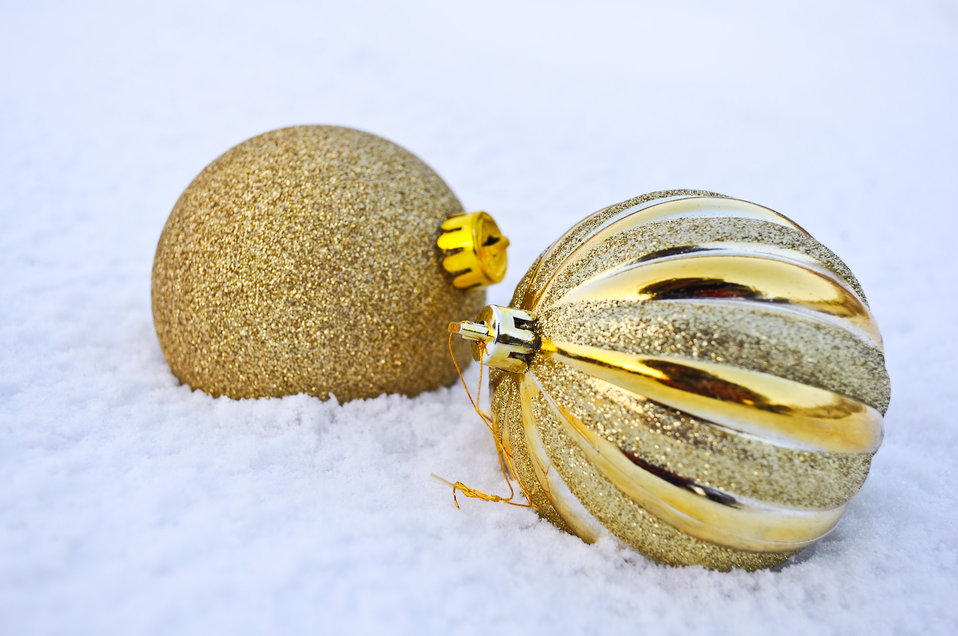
Christmas decorations in the snow.